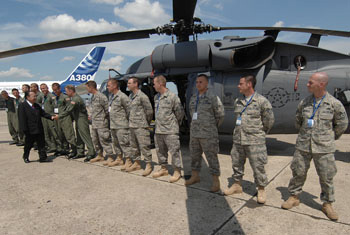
Secretary of the Air Force visit honors memorial and supports Paris Air Show

Senator Daniel K. Inouye of Hawaii shakes hands and lauds the pilots of the 41st Rescue Squadron and maintainers of the 723rd Aircraft Maintenance Squadron at Le Bourget Airport, France. Both units from Moody Air Force Base, Ga. proudly display their HH-60G Pave Hawk rescue helicopter. The Pave Hawk rescue helicopter is one of the several U.S. military aircraft put on show June 15 to 20 at the Paris Air Show.